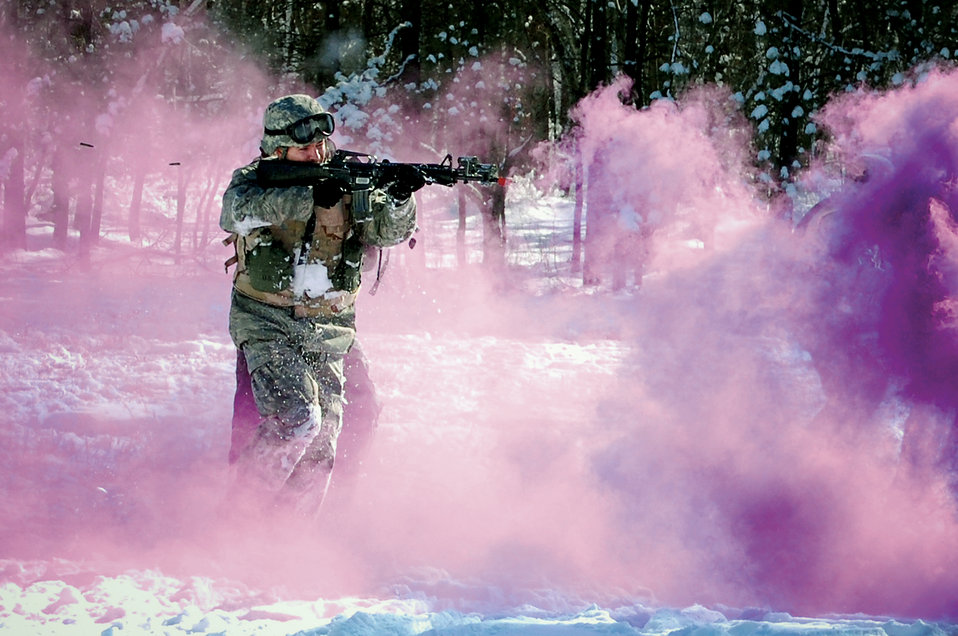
We'll smoke them out

An Airman in the Advanced Contingency Skills Training Course at the Air Expeditionary Center at Joint Base McGuire-Dix-Lakehurst, N.J., practices a patrolling and tactics response during training. The training prepares Airmen for upcoming deployments.